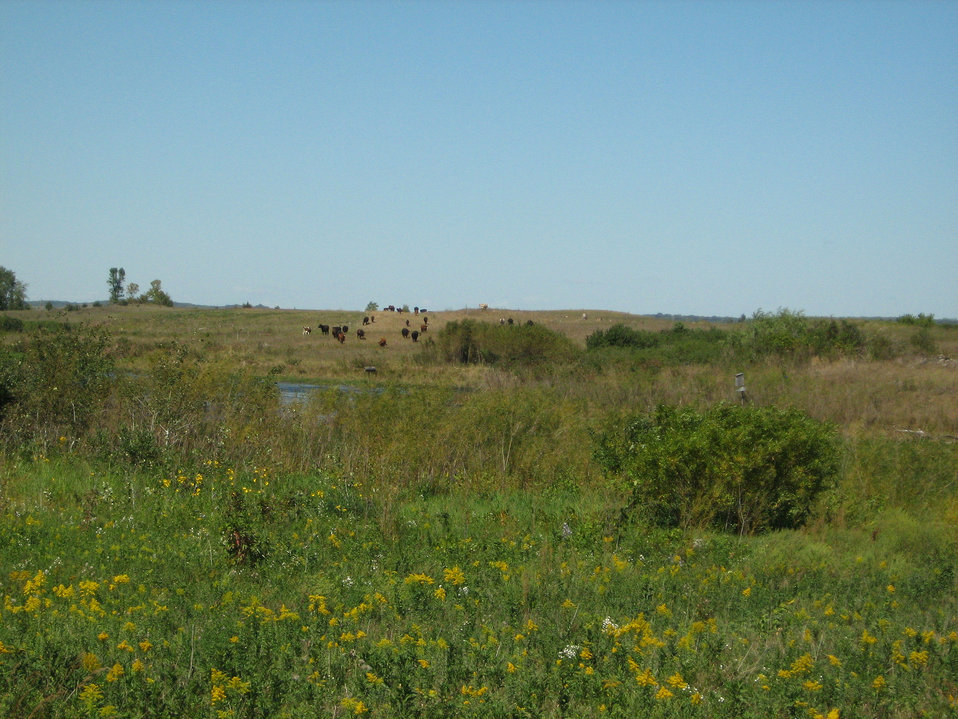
Grazing

Cows grazing Brenner Lake Waterfowl Production Area 9-5-12.